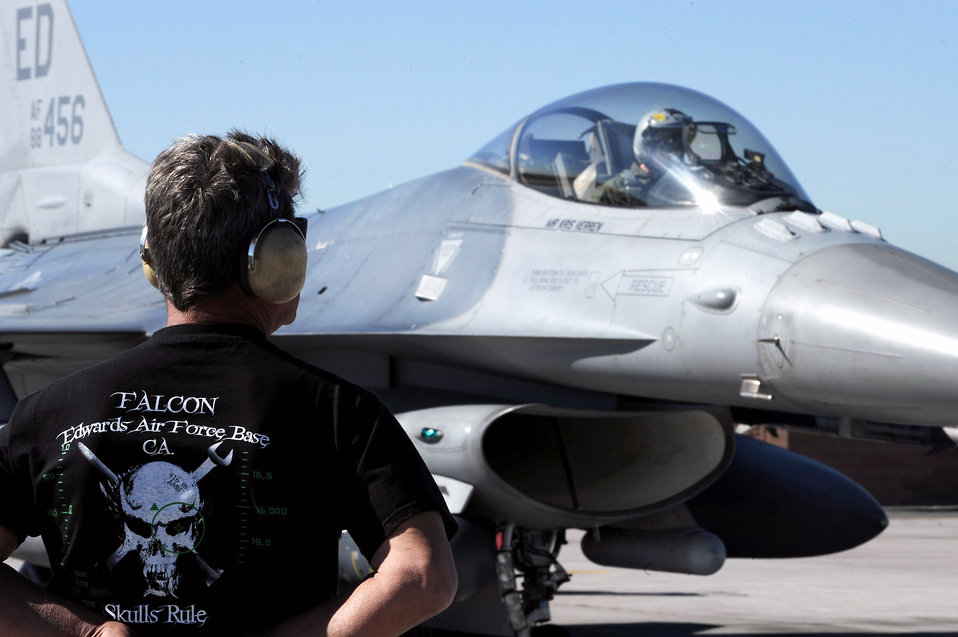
416th FLTS first AFMC unit participates at Red Flag

Kenny Booth prepares to taxi an F-16 Fighting Falcon in support of Red Flag 09-2 Feb. 4 at Nellis Air Force Base, Nev. Red Flag is a multi-national exercise providing a realistic environment to practice combat scenarios. The experience gained during the exercise is vital to the survival of aircrews in combat. Mr. Booth is a crew chief assigned to the 416th Flight Test Squadron at Edwards Air Force Base, Calif.